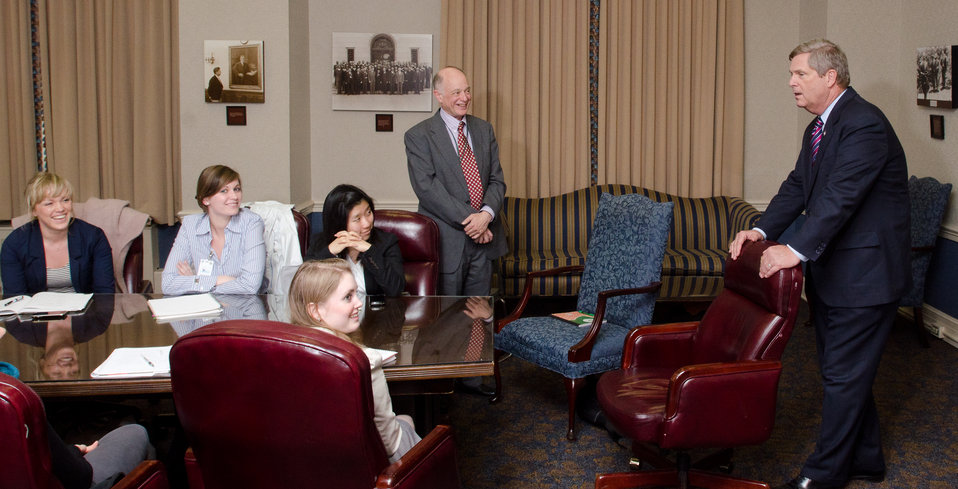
American University Assistant Professor Daniel Whitman (standing) thanked U.S. Department of Agriculture (USDA) Secretary Tom Vilsack (right) for the opportunity to take questions from American University students, who came to the USDA on Wednesday March 23, 2011, in Washington, DC, to learn about Foreign Agriculture Service and the international role of the USDA.